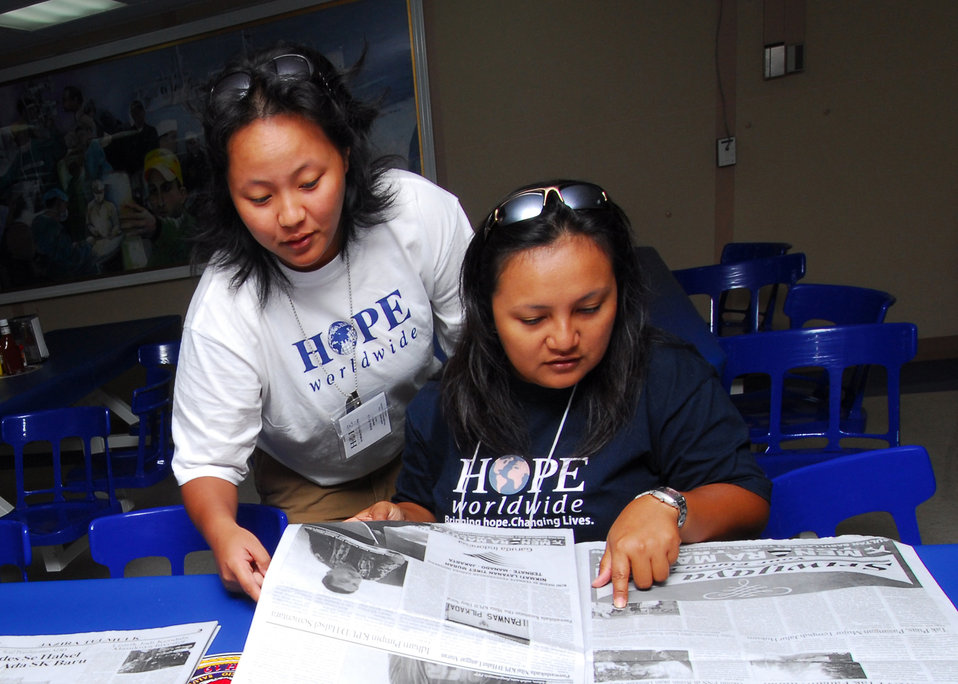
100725-N-4044H-258HOPE Worldwide Members Translate Indonesian Newspapers

HOPE worldwide members, embarked aboard the Military Sealift Command hospital ship USNS Mercy (T-AH 19), translate Indonesian newspapers during Mercy’s transition through Indonesia on July 25, 2010. Mercy is in the North Maluku Islands conducting Pacific Partnership 2010, the fifth in a series of annual U.S. Pacific Fleet endeavors conducted in Indonesia as a disaster relief exercise aimed at strengthening regional partnerships.